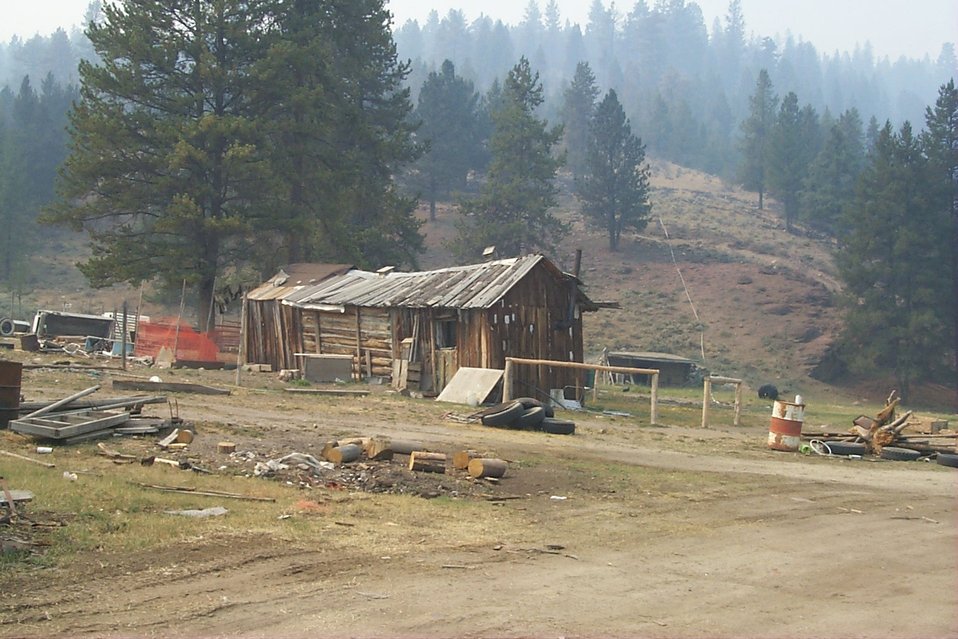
Urban interface Fire Clearwater Fire Salmon Field Office USRD Upper Snake River District